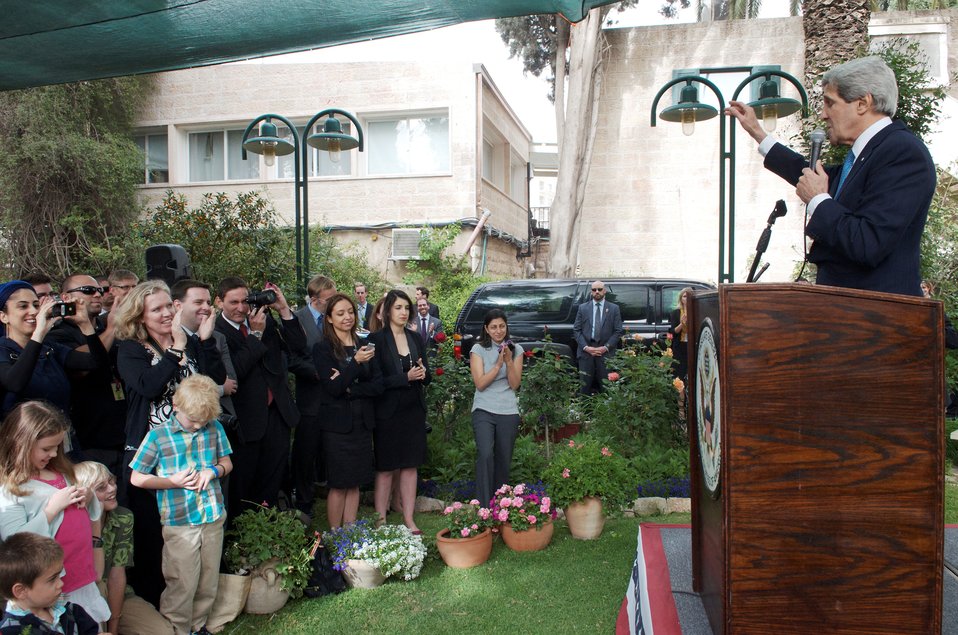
Secretary Kerry Addresses Consulate Jerusalem Staff and Families

U.S. Secretary of State John Kerry addresses the staff and families at the U.S. Consulate General in Jerusalem on April 8, 2013.